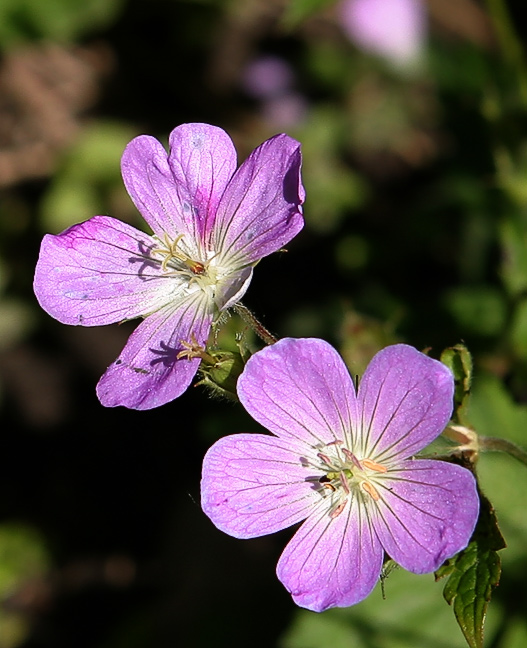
Self made, Taken June 2007, in Minnesota by Paul Henjum.